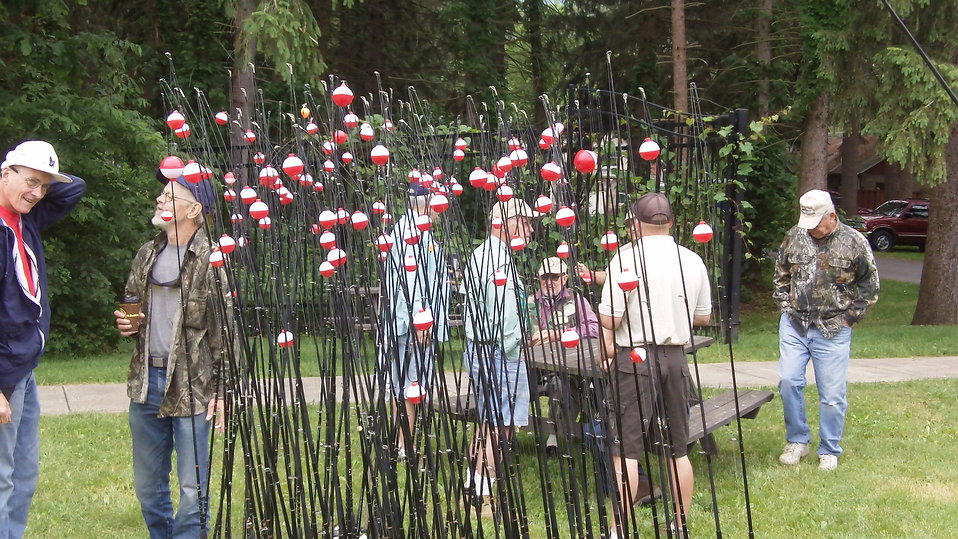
Northeast Fishery Center's Annual Fishing Event

Fishing poles at the Northeast Fishery Center's annual fishing event in Lamar, PA.